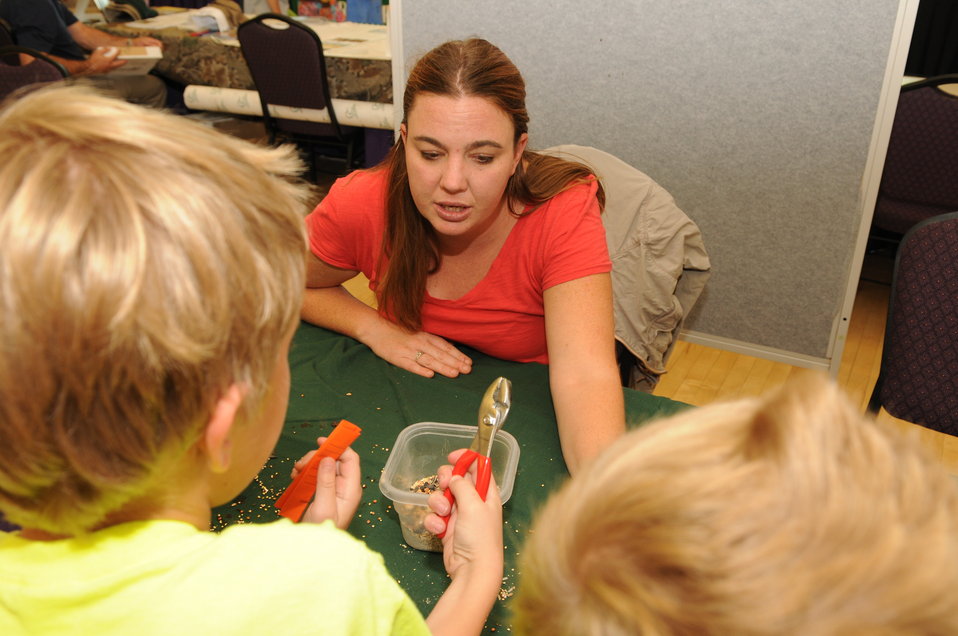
Youth Outreach

The U.S. Fish & Wildlife Service sponsored the 2012 Federal Duck Stamp Art Contest September 28 and 29 in Ogden, Utah, at Weber State University. A panel of five judges was responsible for choosing the art work used to design the 2013-2014 Migratory Bird Hunting and Conservation Stamp.